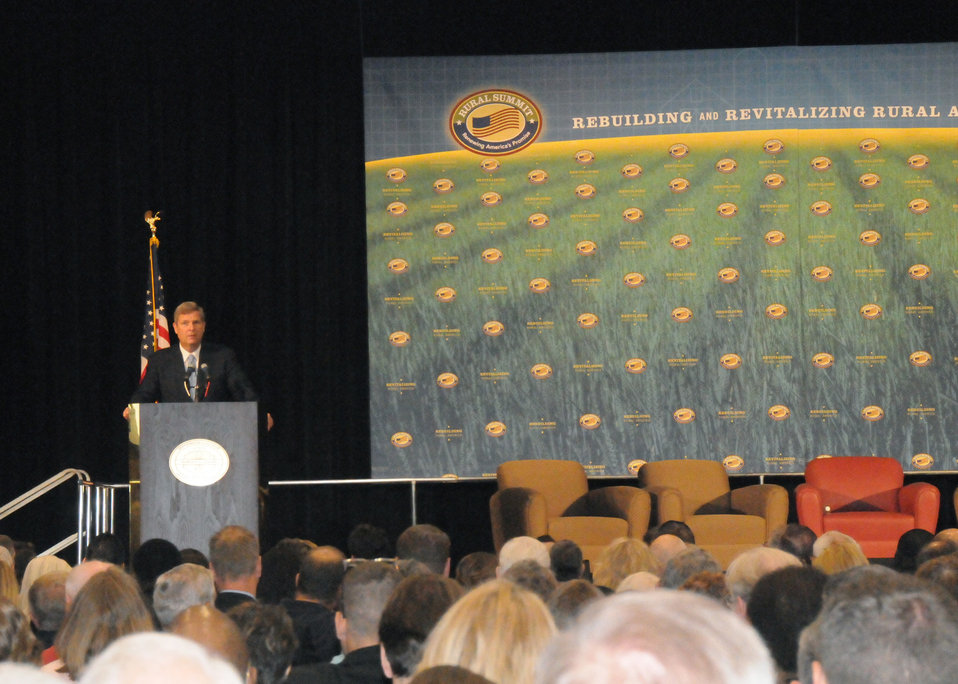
Agriculture Secretary Tom Vilsack speaks at the opening session of the National Rural Summit held at Jefferson College in Hillsboro, MO., on Thursday, June 3, 2010. USDA photo 10di1386-90